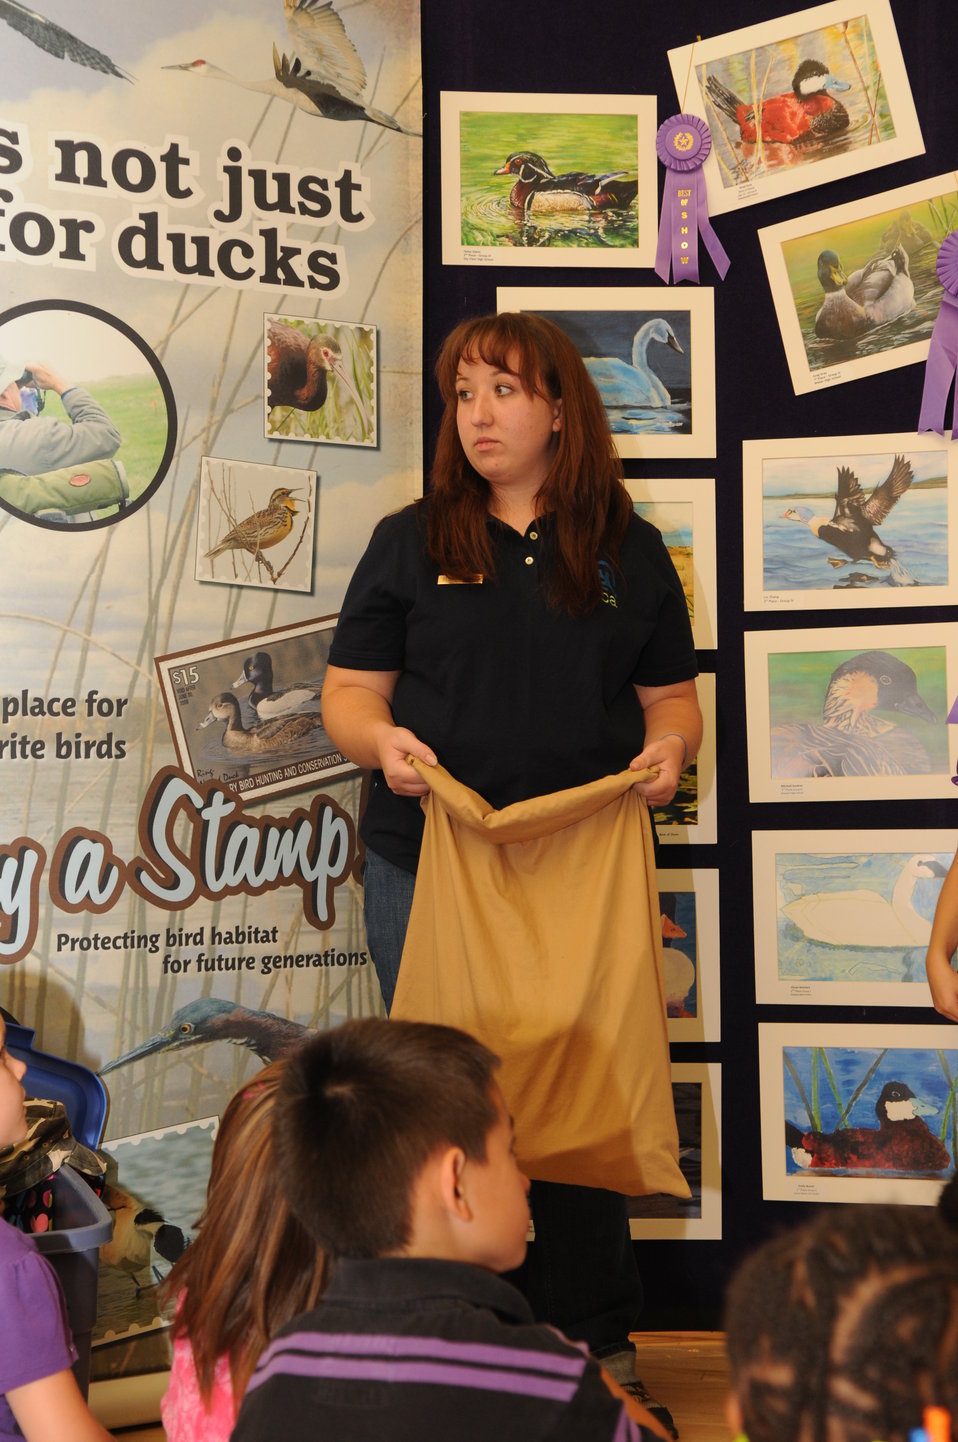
Youth Outreach

The U.S. Fish & Wildlife Service sponsored the 2012 Federal Duck Stamp Art Contest September 28 and 29 in Ogden, Utah, at Weber State University. A panel of five judges was responsible for choosing the art work used to design the 2013-2014 Migratory Bird Hunting and Conservation Stamp.